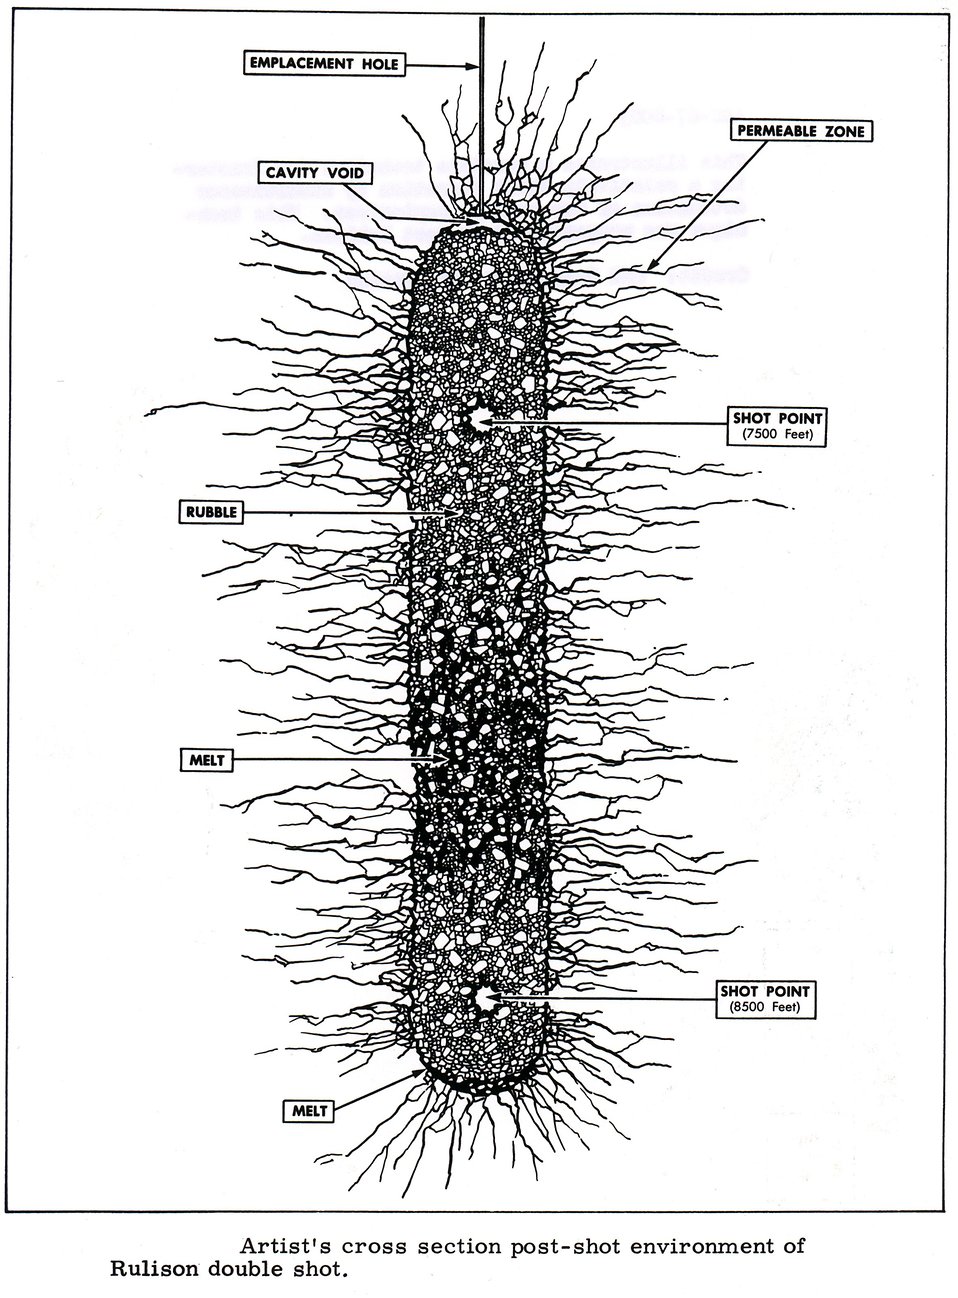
This illustrates a possible technique for fracturing a relatively thick formation by simultaneous detonation of two nuclear explosives. Circa 1967.